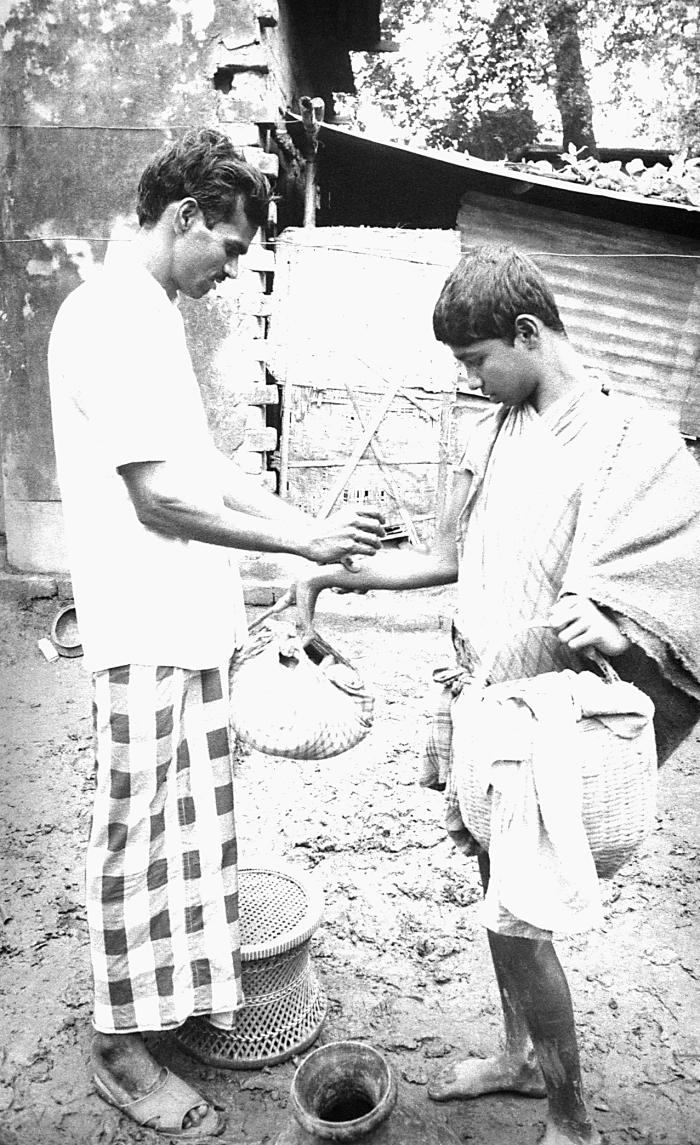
This 1975 image depicted a smallpox eradication team guard who was in the process of administering a smallpox vaccine to a local passerby on the recipient's right forearm. After having been dipped into the vaccine solution, the bifurcated needle was used to prick the skin a number of times in order to allow the vaccinia virus to penetrate the skin, thereby, inoculating the vaccinee.If the vaccination is successful, a red and itchy bump develops at the vaccine site in three or four days. In the first week, the bump becomes a large blister, fills with pus, and begins to drain. During the second week, the blister begins to dry up and a scab forms. The scab falls off in the third week, leaving a small scar. People who are being vaccinated for the first time have a stronger reaction than those who are being revaccinated.